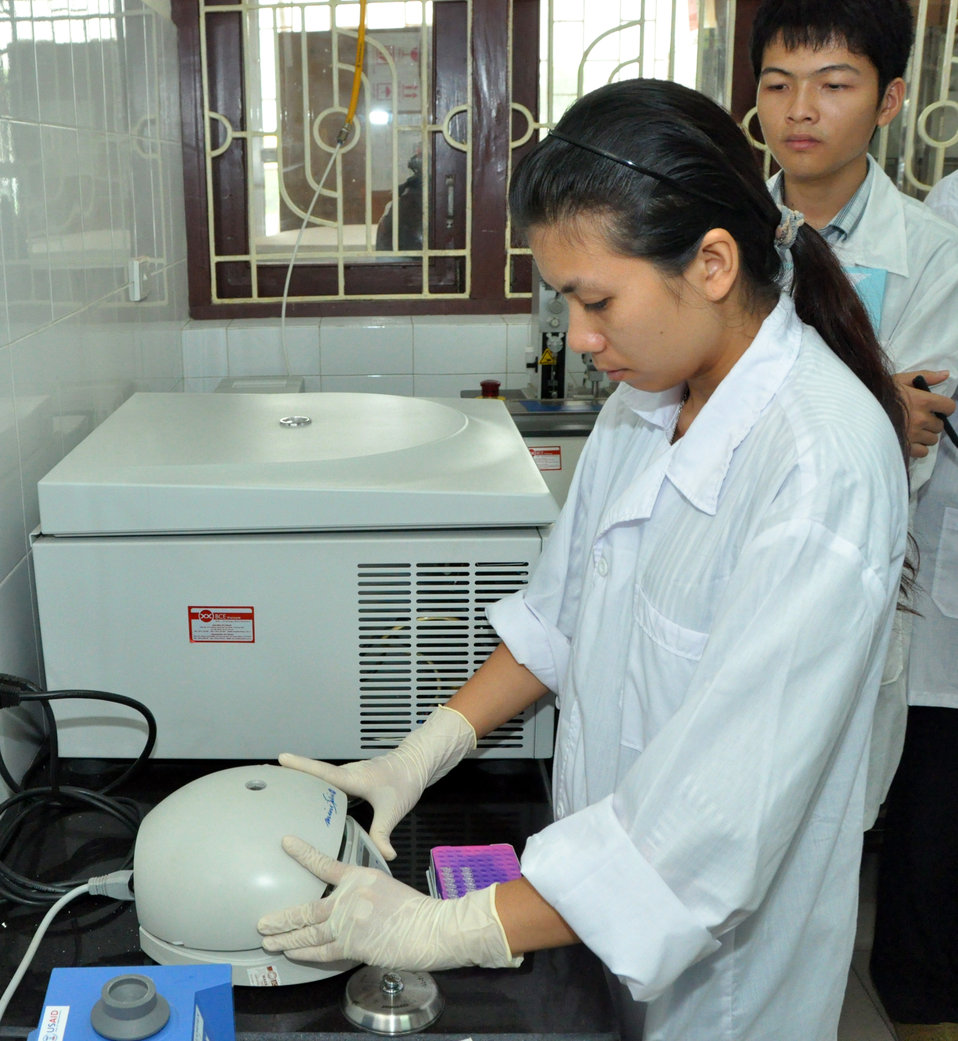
Animal virus detection lab training in Hanoi

Trainee learns how to detect viruses in Hanoi under a USAID program.